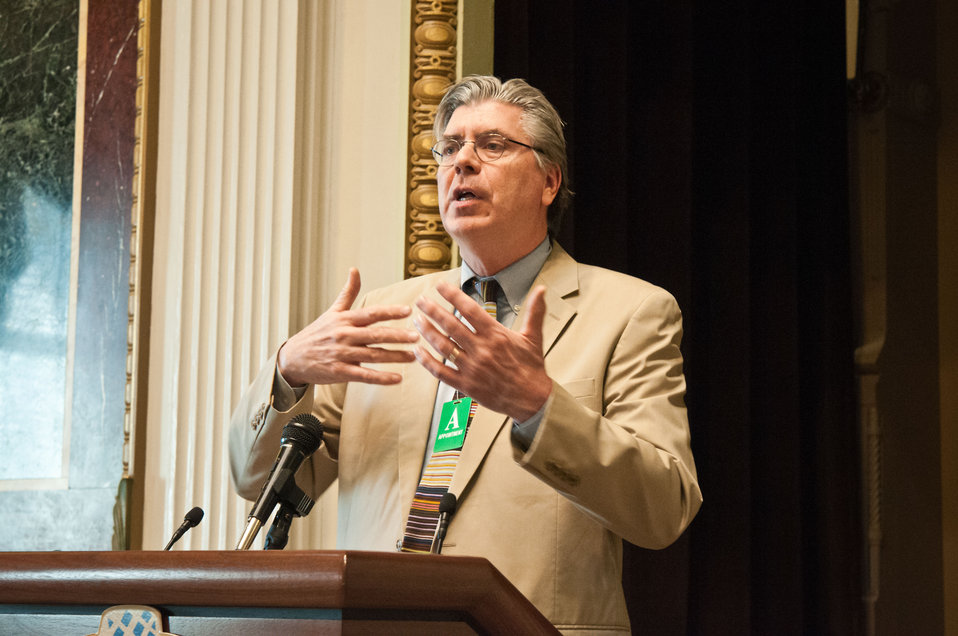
United States Department of Agriculture, Chief Economist Dr. Joseph Glauber discussed the agricultural economic outlook at the Spring National Association of Farm Broadcasters (NAFB), “Washington Watch” member retreat in Washington, D.C. This year the meeting was held in the Eisenhower Executive Office Building, Indian Treaty Room on Tuesday, April 24, 2012, featuring United Sates Department of Agriculture and Obama Administration officials. This opportunity provides an occasion to highlight efforts to rebuild and revitalize rural America, including efforts for the agricultural community. NAFB is the recognized and trusted source of agricultural and rural lifestyle information for America with approximately 200 members who broadcast via radio in nearly every state in the country.